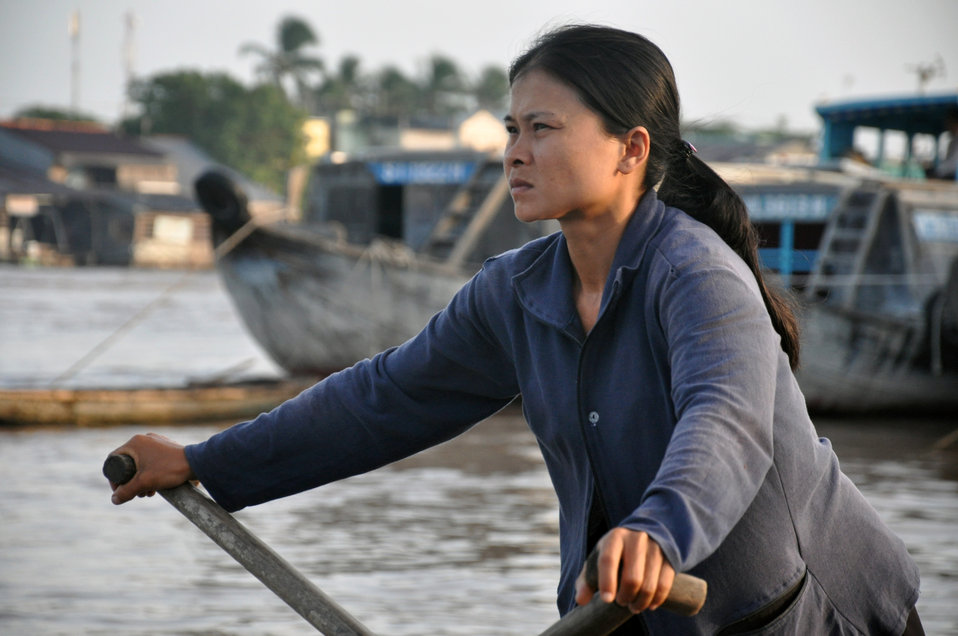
Views from Can Tho's Floating Market